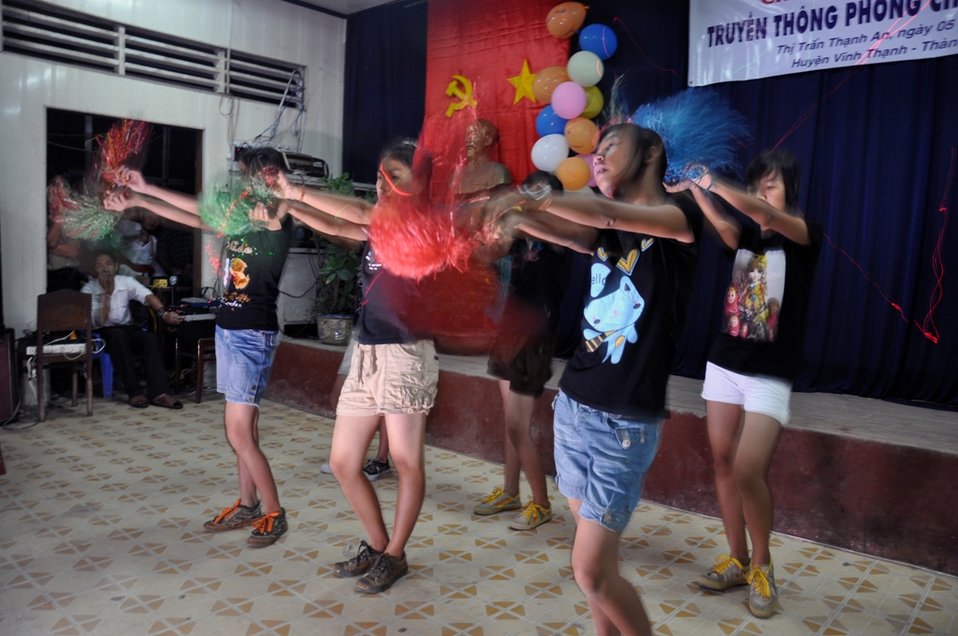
Can Tho Avian Influenza Community Awareness, Vinh Thanh District

Photo, Richard Nyberg @USAIDVietnam